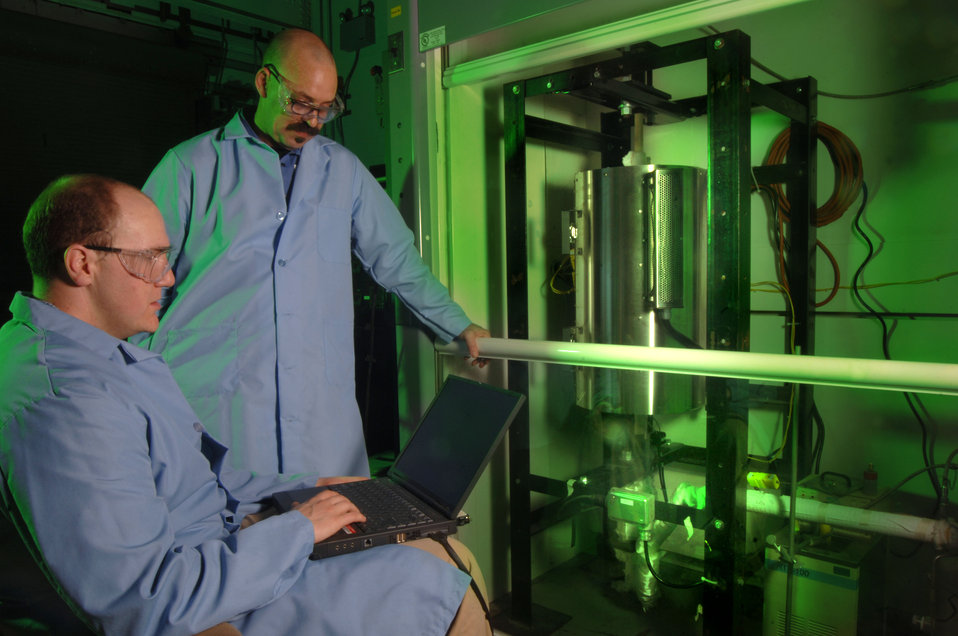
Jason Trembly, seated, a graduate student from Ohio University working as a research associate, and Chris Johnson, a research in the Office of Research and Development at the Department of Energy's National Energy Technology Laboratory, conduct performance testing of oxide fuel cells operated on coal syngas.